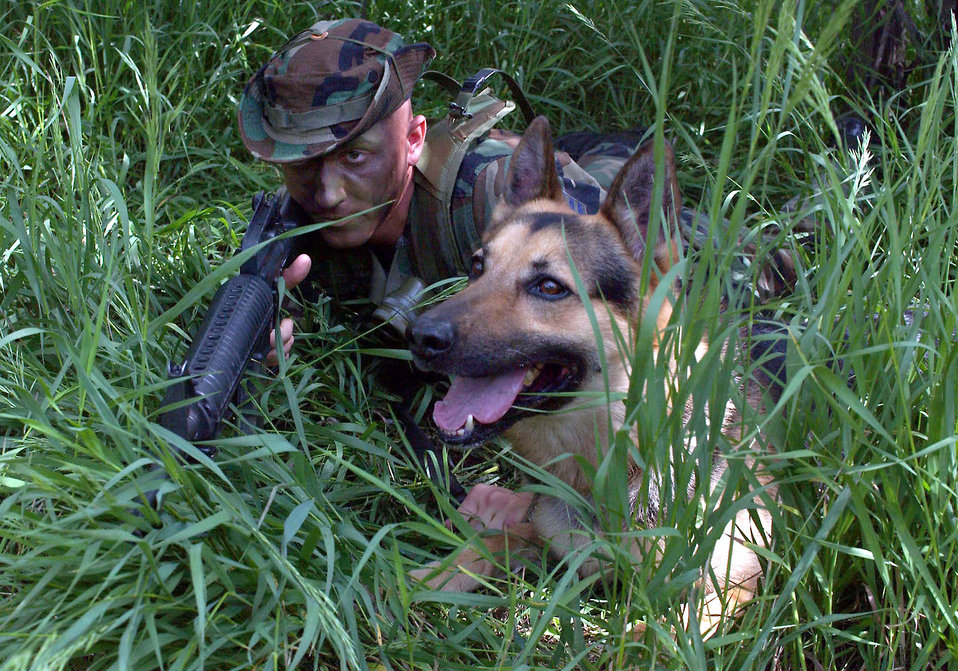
Watching and waiting

MINOT AIR FORCE BASE, N.D. -- Senior Airman David Mathieu, a military working dog handler, and his partner, Bak, take part in an air base ground-defense exercise here recently. Mathieu is assigned to the base's 5th Security Forces Squadron.